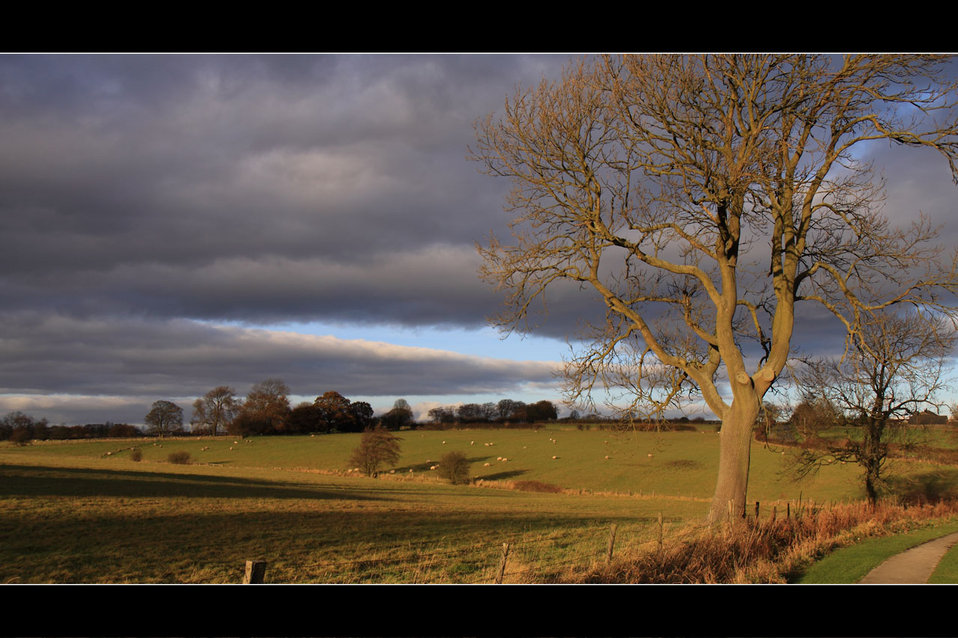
Yorkshire

Evening in yorkshire in autumn.